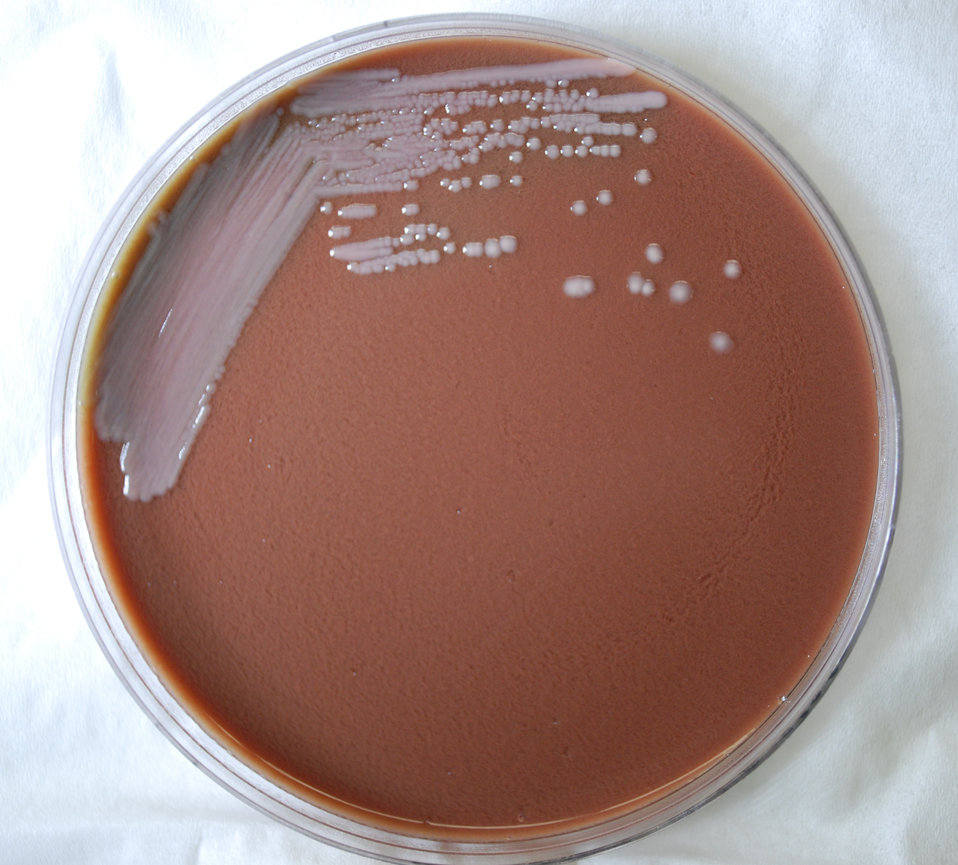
This photograph depicts the colonial morphology displayed by Gram-negative Burkholderia mallei bacteria, which was grown on a medium of chocolate agar, for a 48 hour time period, at a temperature of 37�C. See PHIL 12252 for closer view of these bacterial colonies.